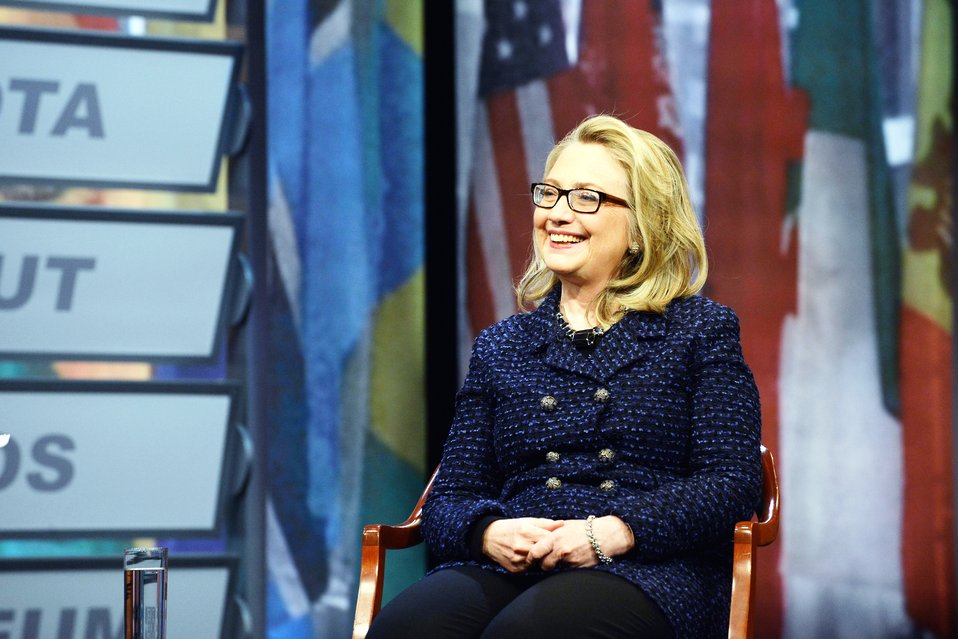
Secretary Clinton Participates in a Global Town Hall

U.S. Secretary of State Hillary Rodham Clinton participates in a Global Town Hall at the Newseum in Washington, D.C., on January 29, 2013.